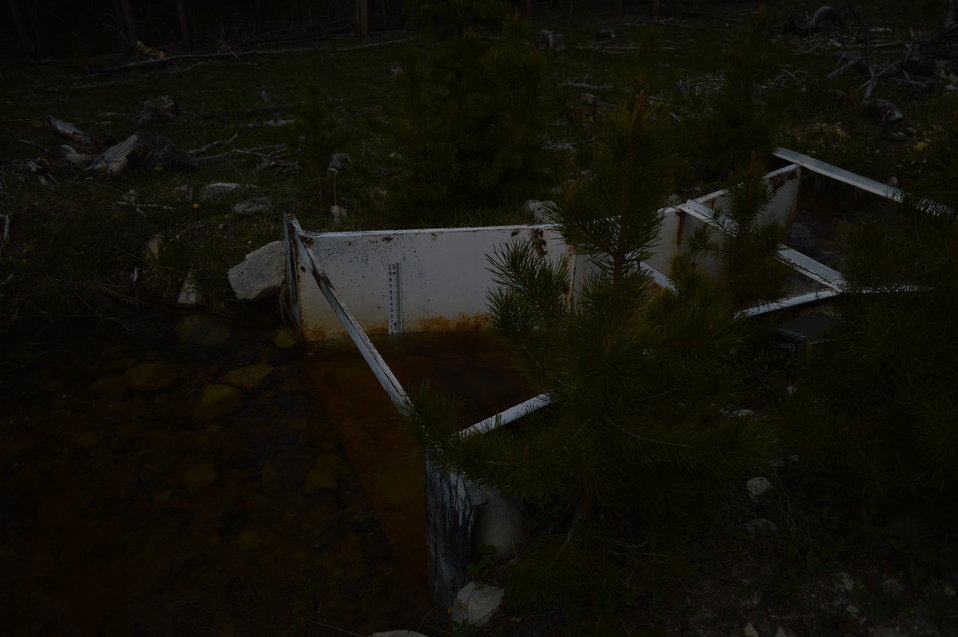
Regional Leadership Visit to Montana 2014